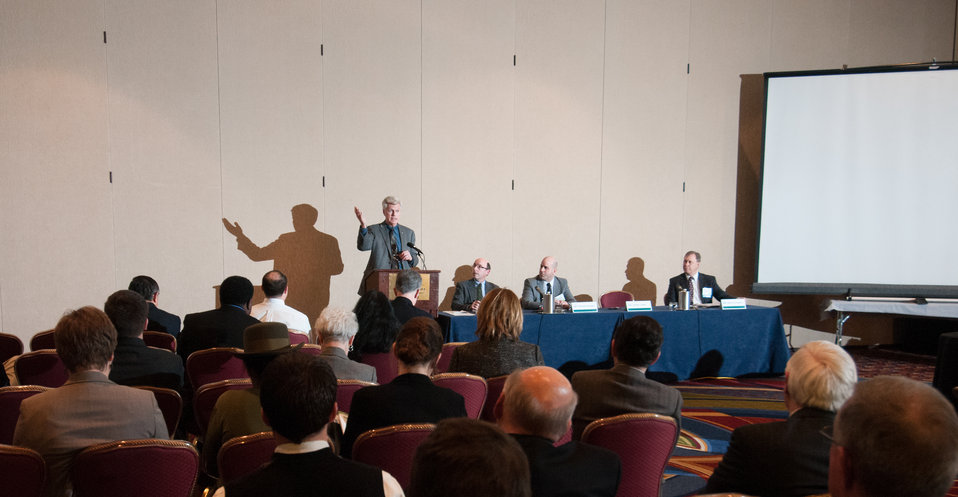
Ecological Restoration Institute Regents’ Professor and Director Wally Covington speaks about “What Forest Restoration Means for Agriculture and Communities,” during the 2013 Agricultural Outlook Forum, held at the Crystal Gateway Marriott Hotel, Arlington, Virginia on Thursday, Feb. 21, 2013. This annual Forum brings together producers, policymakers, and business, government, and industry leaders to meet, exchange ideas, and discuss timely agriculture issues.